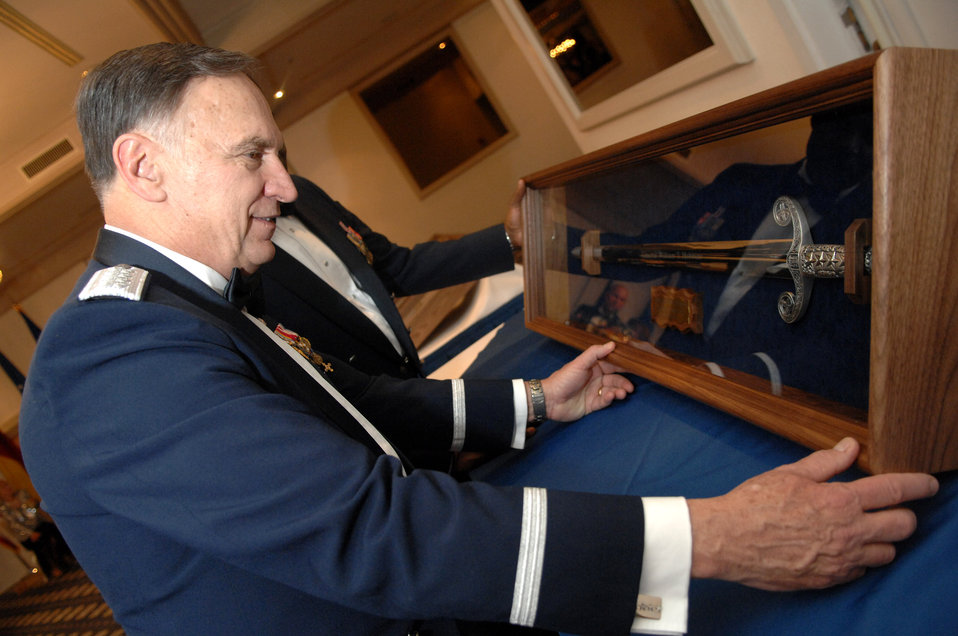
Gen. Hobbins honored with Order of the Sword

Gen. William T. Hobbins, U.S. Air Forces in Europe commander, admires the sword he received during a USAFE Order of the Sword induction ceremony in his honor. Being inducted into the order is the highest honor an enlisted organization or command can bestow on an individual.